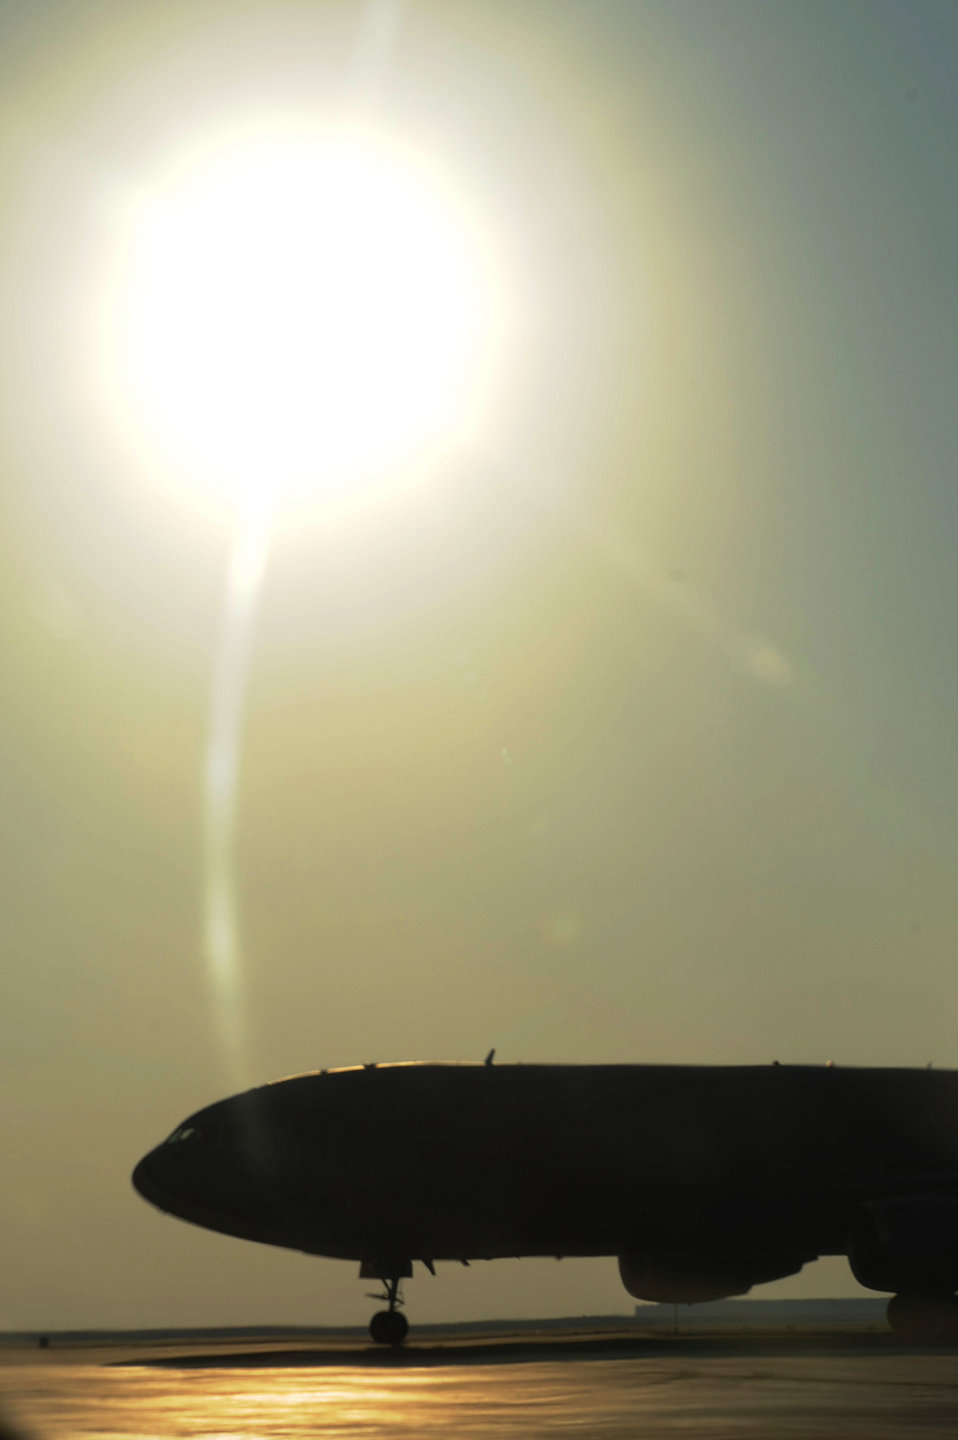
KC-10s keep aircraft flying in Southwest Asia

A KC-10 Extender returns from a combat air refueling mission at an air base in Southwest Asia Jan. 6, 2010. The KC-10 is assigned to the 908th Expeditionary Air Refueling Squadron, and is one of Air Mobility Command's air refueling aircraft deployed to the U.S. Central Command area of responsibility that provides the